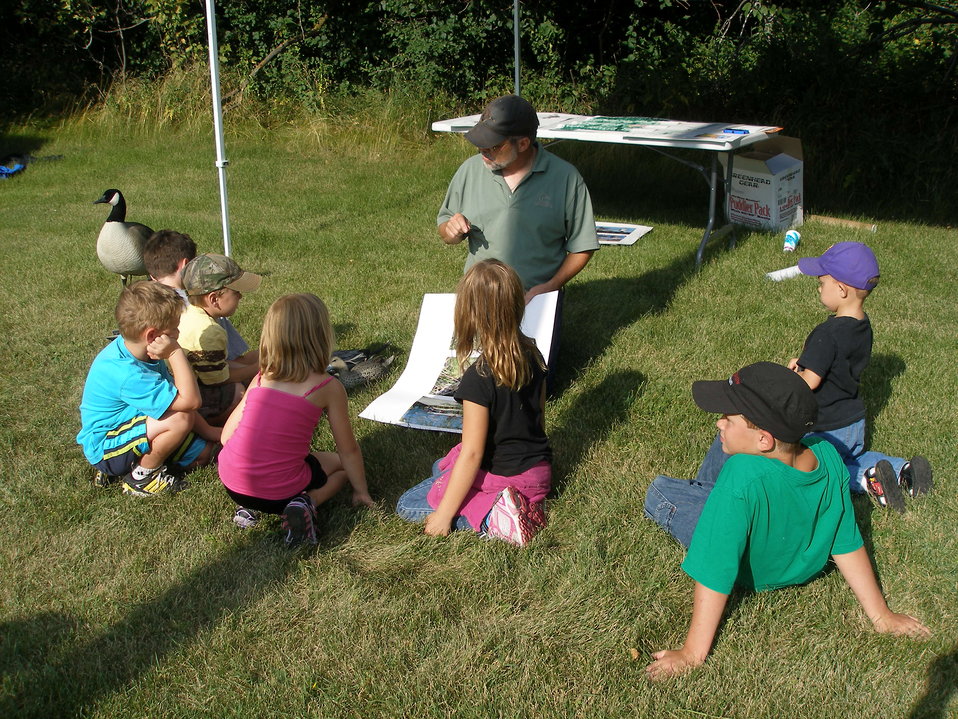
2011 Greenwing Day - Ducks Unlimited Waterfowl ID session

Des Lacs National Wildlife Refuge, Tasker's Coulee

Joe Breidenbach of Ducks Unlimited discusses with participants about the key characteristics used to ID waterfowl.